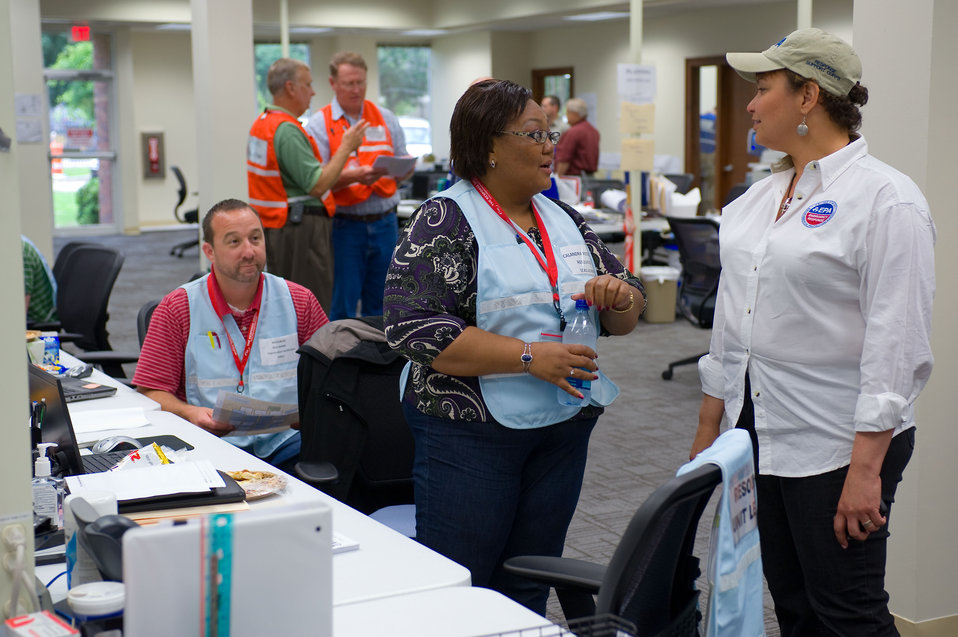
June 3, Stopping by to thank those that are working night and day

Many have put their lives on hold to work night and day, every day to respond to the BP Oil Spill. Federal responders have answered to the task and have come from all over the country to staff command posts in the Gulf and Washington D.C.